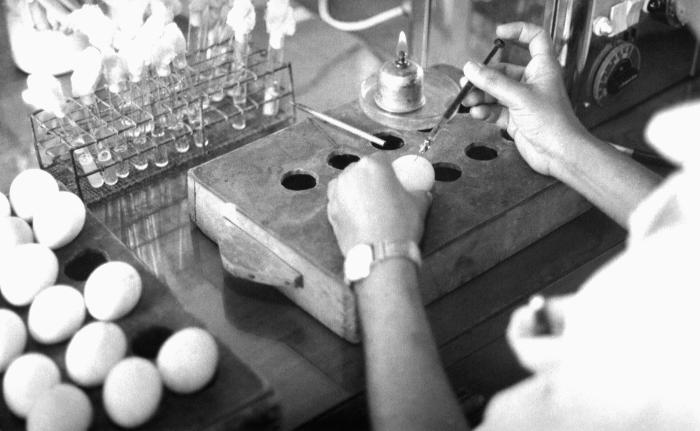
This image depicted a technician in a Bangladesh laboratory who was in the process of creating smallpox vaccine, and was in the process of injecting embryonated chicken eggs with viral particles. It was taken by Dr. Stan Foster, EIS, Officer, Class of 1962, while he was part of the worldwide Global Smallpox Eradication Campaign of the late 1960s, early 1970s.